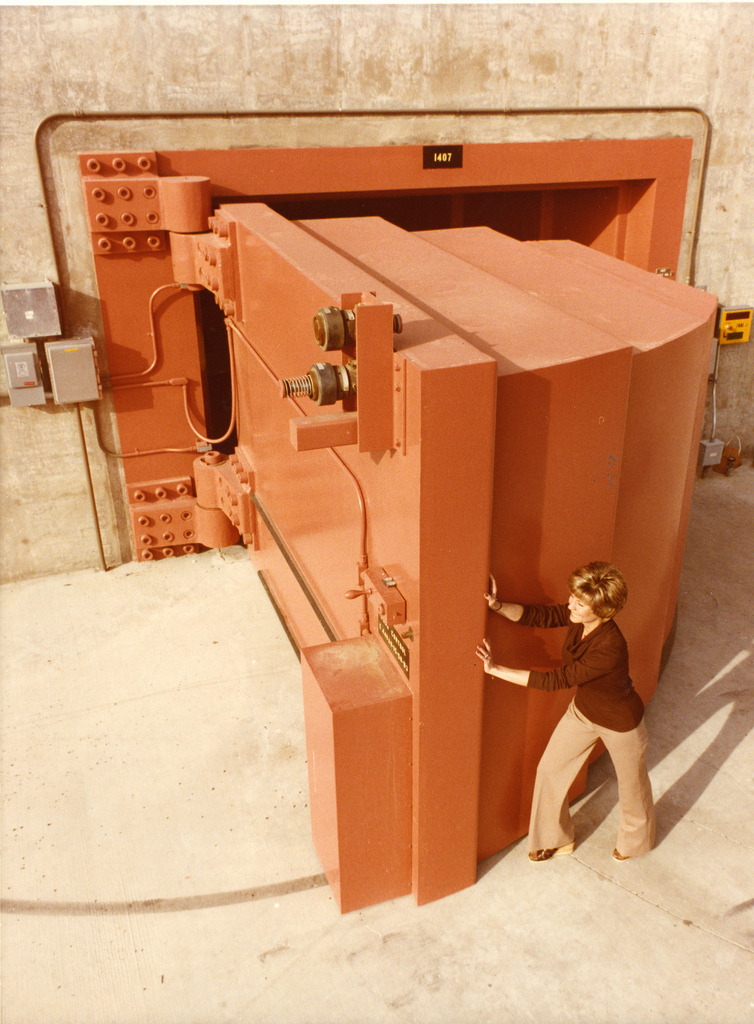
How to Open the World's Heaviest Door

For 35 years, the Energy Department has pursued an all-of-the-above energy strategy — and the critical work done at the National Labs has helped put America at the top of the global clean energy race. This photo from 1979 shows a Lawrence Livermore National Laboratory employee opening the world's heaviest hinged door, which was eight feet thick, nearly twelve feet wide, and weighed 97,000 pounds. A special bearing in the hinge allowed a single person to open or close the concrete-filled door, which was used to shield the Rotating Target Neutron Source-II (RTNS-II) -- the world’s most intense source of continuous fusion neutrons. Scientists from around the world used it to study the properties of metals and other materials that could be used deep inside fusion power plants envisioned for the next century.